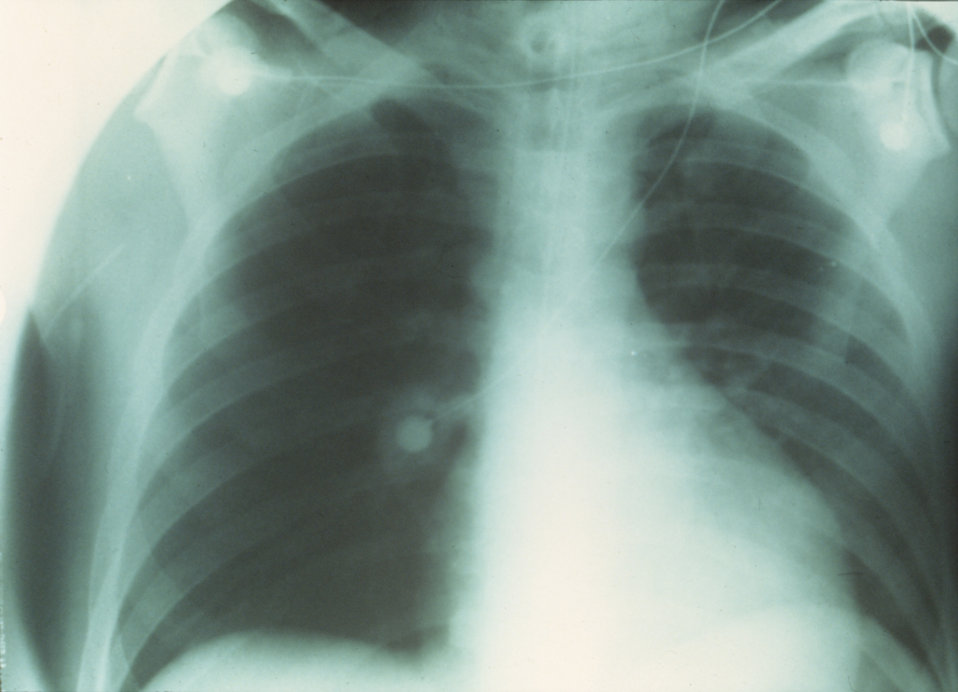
This anteroposterior x-ray reveals the resolution of a plague infection with clearing in the lung fields.